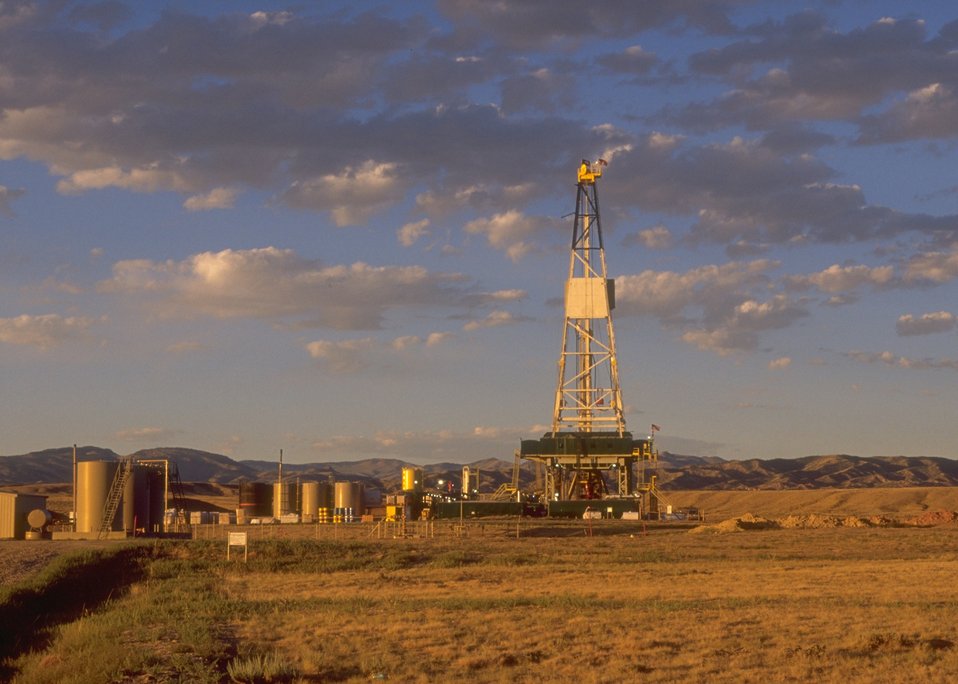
Burlington Northern deep well rig, Casper Field Office.